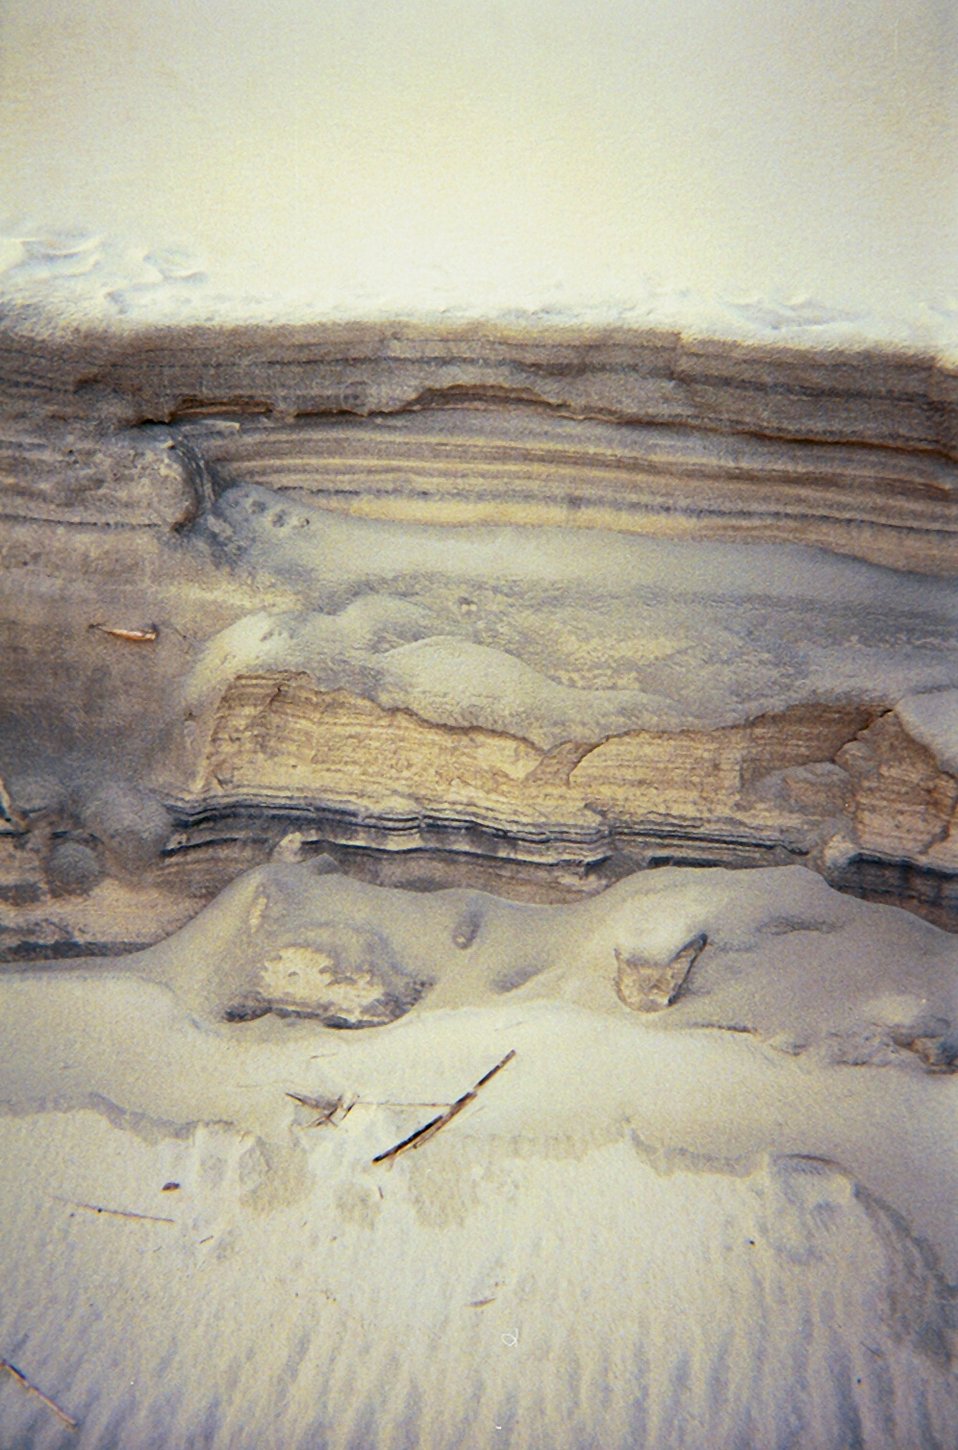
Horizontal sand laminations show along eroding dune. Wind ripples below sand laminations are oriented perpendicular to sand ledge.